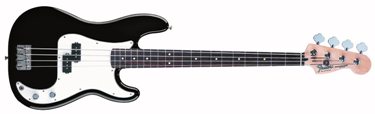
Ian's Fender Precision Bass.